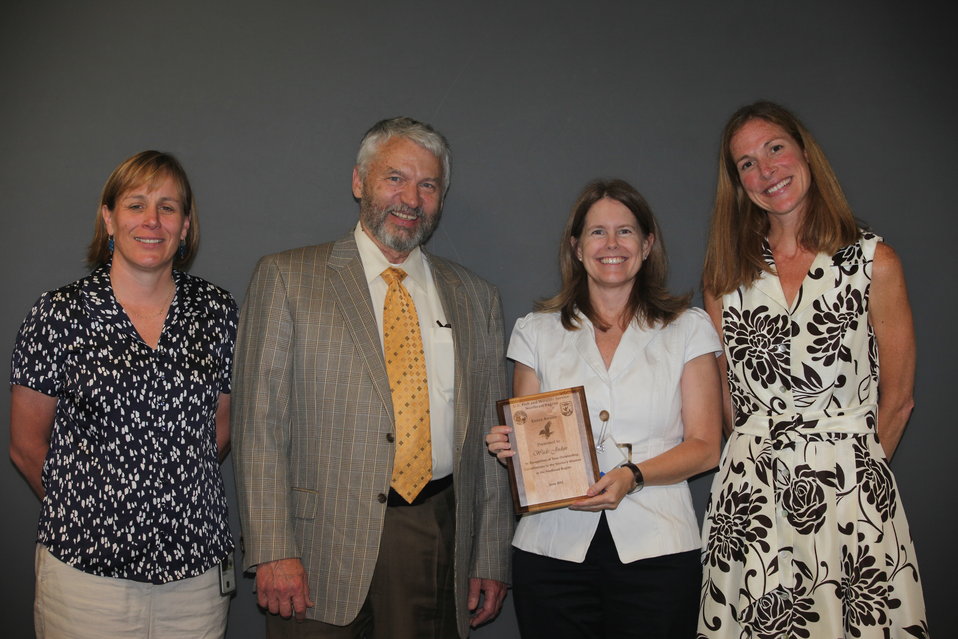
Susan Lingenfelser of the Virginia Feild Office recieved the Eagle Award.
From left to right: Deputy Regional Director Deb Rocque, Deputy Director Rowan Gould, Susan Lingenfelser, and Regional Director Wendi Weber